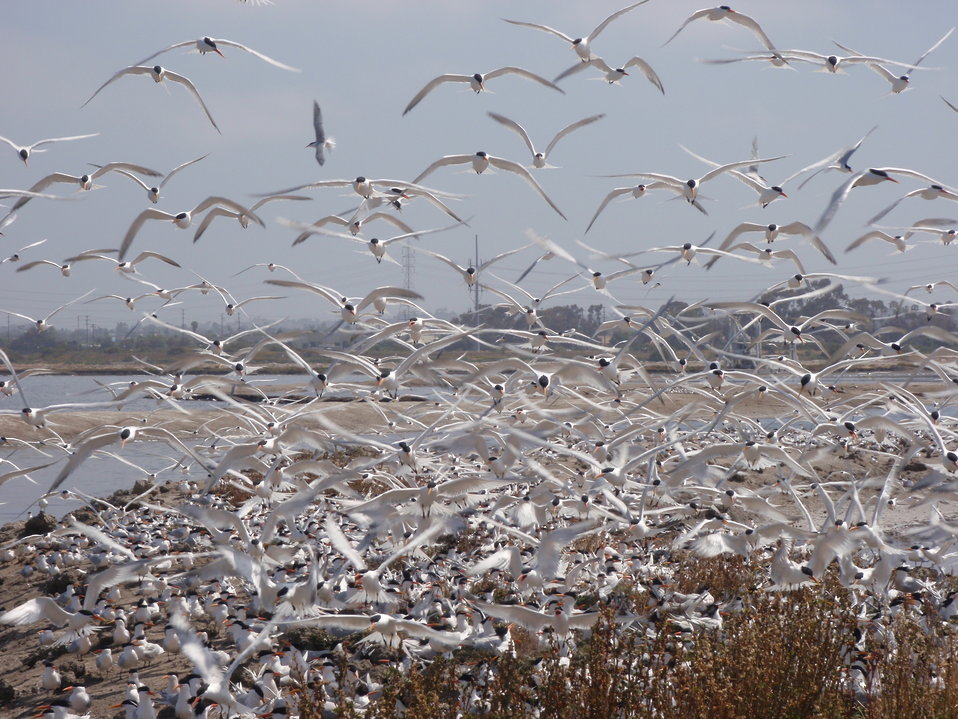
We're coming at you!

A mixed tern colony of elegants, royals, caspians, and even some cormorants, on the salt pond levees of the San Diego Bay NWR (South San Diego Bay Unit)